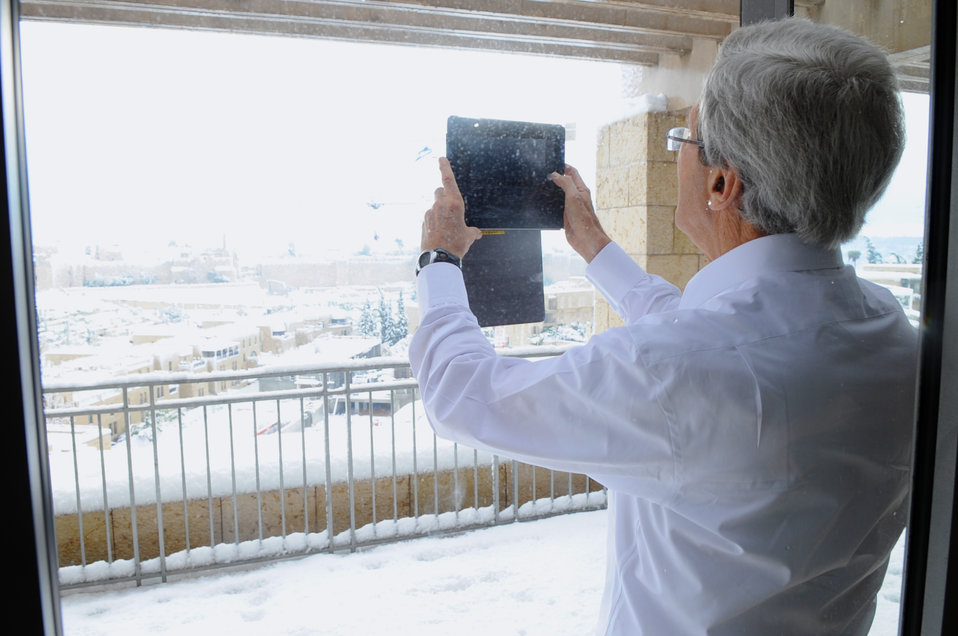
Secretary Kerry Photographs Rare Snow on Jerusalem's Old City

U.S. Secretary of State John Kerry photographs a rare accumulation of snow that fell on Jerusalem's Old City before his meeting with Israeli Prime Minister Benjamin Netanyahu on December 13, 2013.